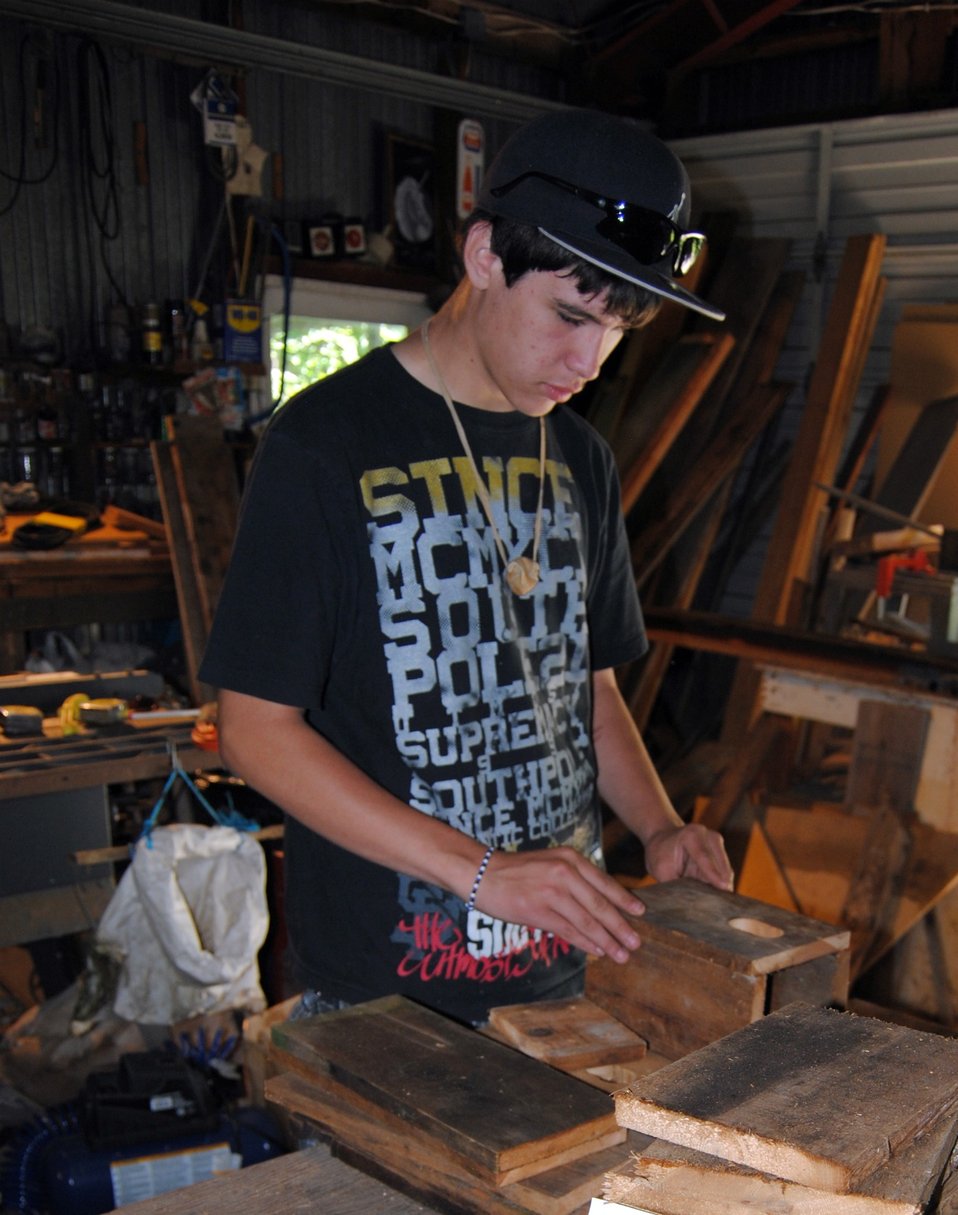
Week 2, Montana Waterfowl Foundation, Ronan, MT

A YCC crew member assembles a bird house.